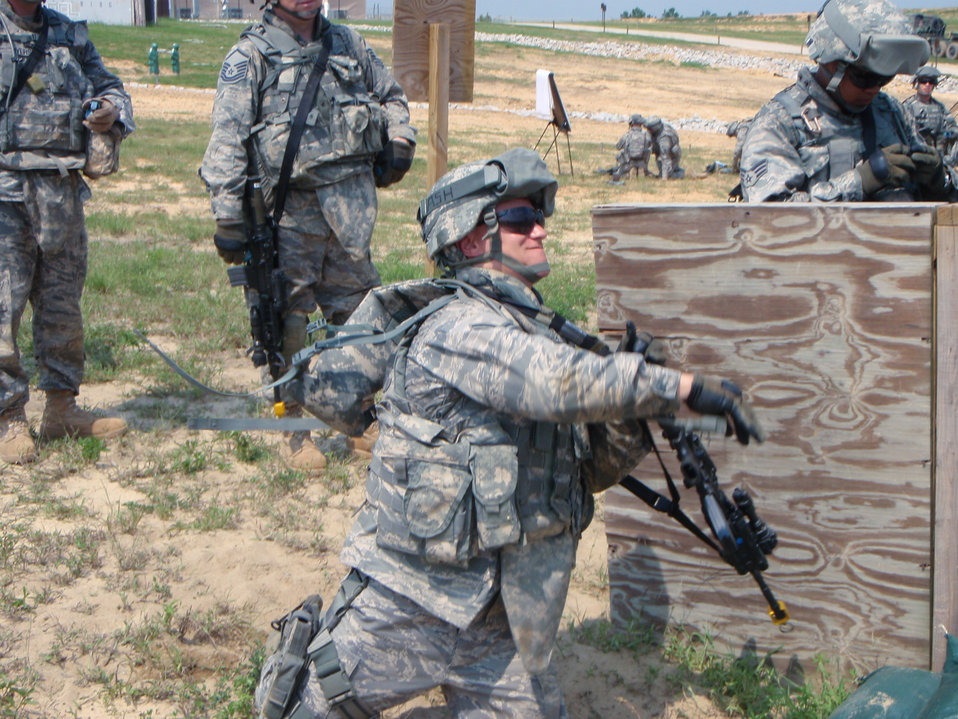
Airmen and Soldiers train for Zabul Provincial Reconstruction Team

Staff Sgt. Chad Ashton practices throwing grenades during a recent warrior battle drill exercise at Fort Bragg, N.C. Sergeant Ashton is a member of the Zabul Provincial Reconstruction Team and is deployed from the 1st Logistics readiness Sqaurdon, Langley Air Force Base, Va.